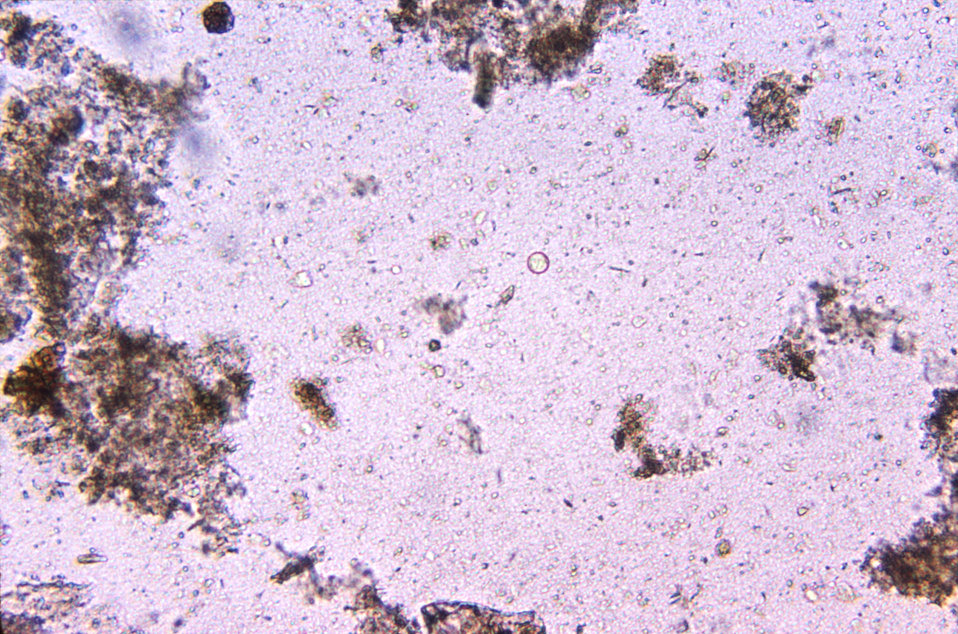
Magnified 100X, this direct mount, unstained photomicrograph revealed the presence of a cyst of the protozoan parasite, Entamoeba coli. This is one intestinal parasite, which lives as a commensal organism, existing harmlessly in the human digestive tract. Of importance, is the fact that this organism can often be confused with its pathogenic counterpart, E. histolytica.